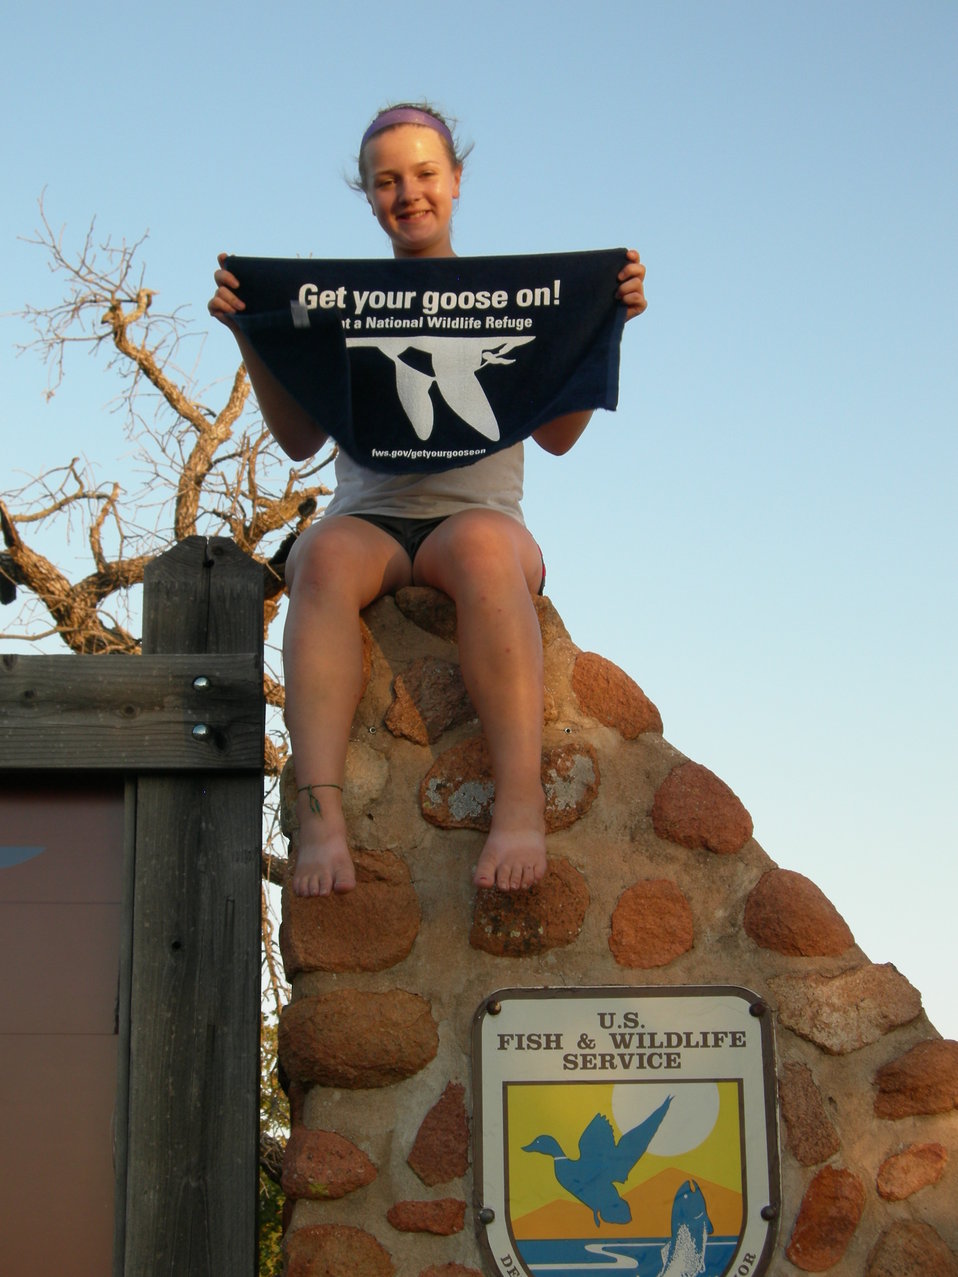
Get Your Goose On!

Wichita Mountains National Wildlife Refuge in Oklahoma.